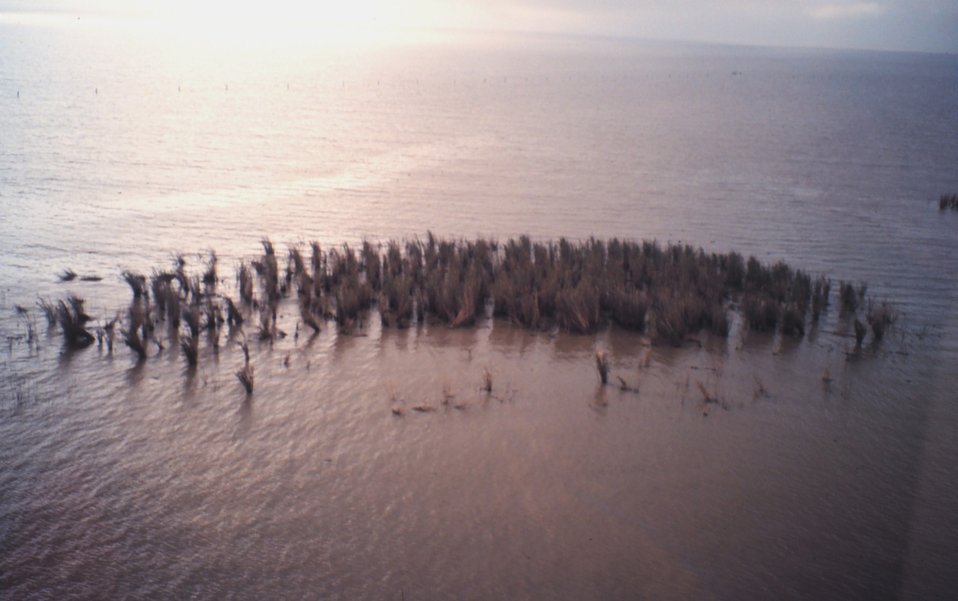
Aerial photo of eroding marsh and oil from recent well blowout